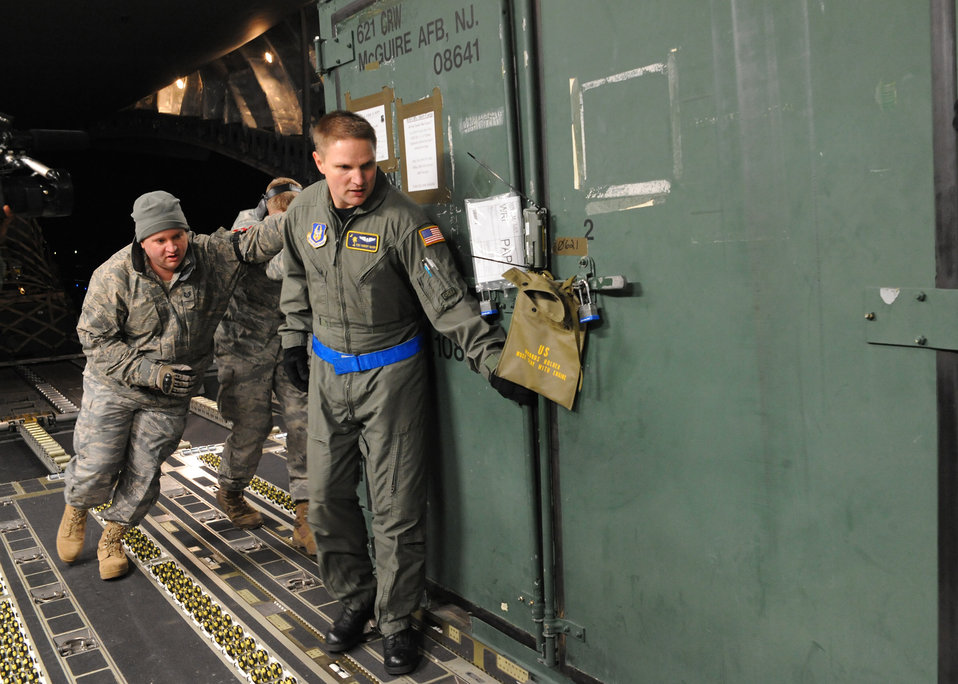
Haiti Humanitarian Effort

Airmen load equipment onto a Charleston C-17 Joint Base McGuire-Dix-Lakehurst, New Jersey, Jan. 15, 2010. The Charleston C-17 was used to transport equipment needed to aid the humanitarian effort in Haiti.